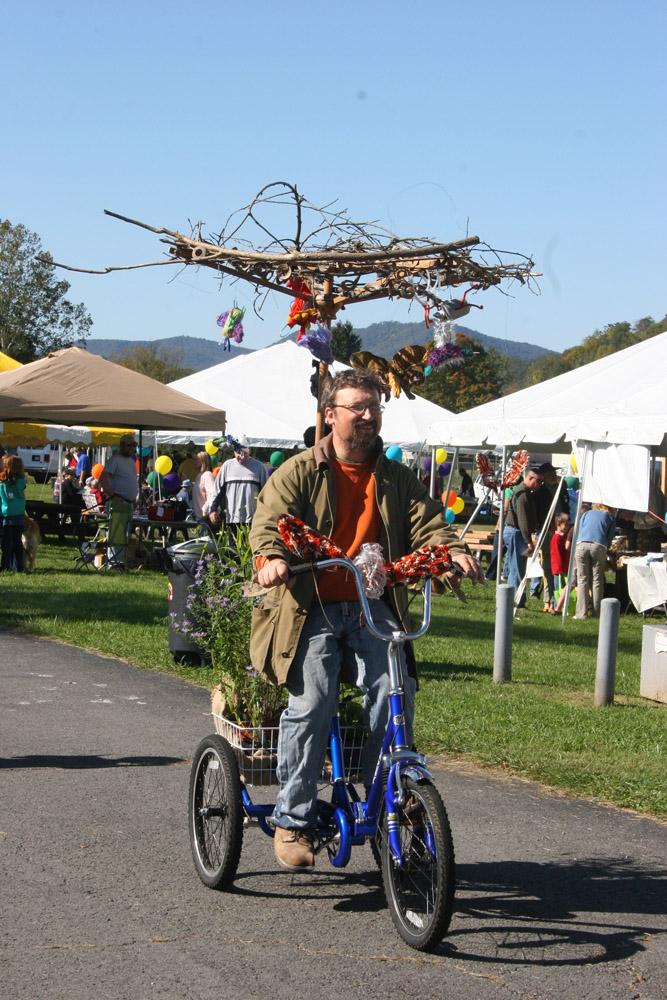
Freshwater Folk Festival

The 5th Annual Freshwater Folk Festival at White Sulphur Springs National Fish Hatchery in West Virginia.Credit: USFWS